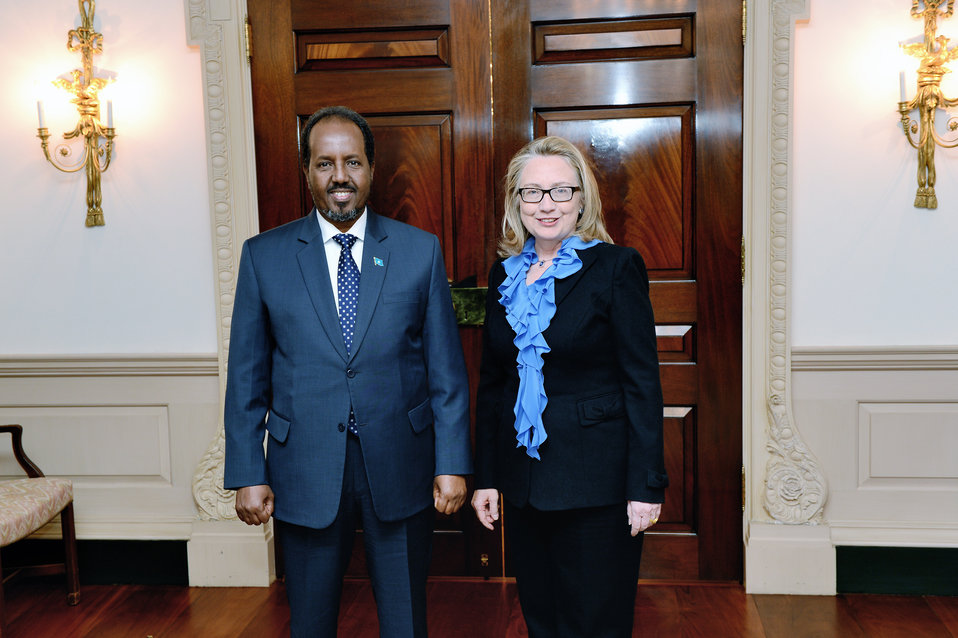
Secretary Clinton Meets With Somali President Hassan Sheikh

U.S. Secretary of State Hillary Rodham Clinton meets with Somali President Hassan Sheikh Mohamud at the U.S. Department of State in Washington, D.C. on January 17, 2013.